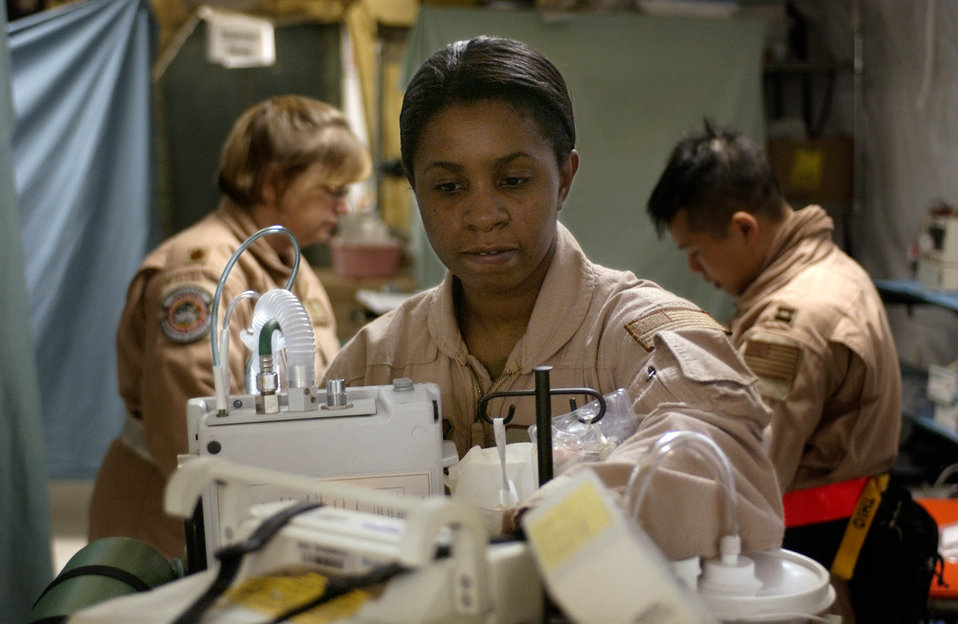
Intensive care in the air

OVER IRAQ -- Tech. Sgt. Tammy Shy monitors medical equipment for a critically injured patient during a medevac flight from Balad Air Base, Iraq, to Ramstein AB, Germany. She is a respiratory technician who is part of a three-person critical-care air-transport team from Ramstein. Sergeant Shy is deployed from the 374th Medical Squadron at Yokota AB, Japan.